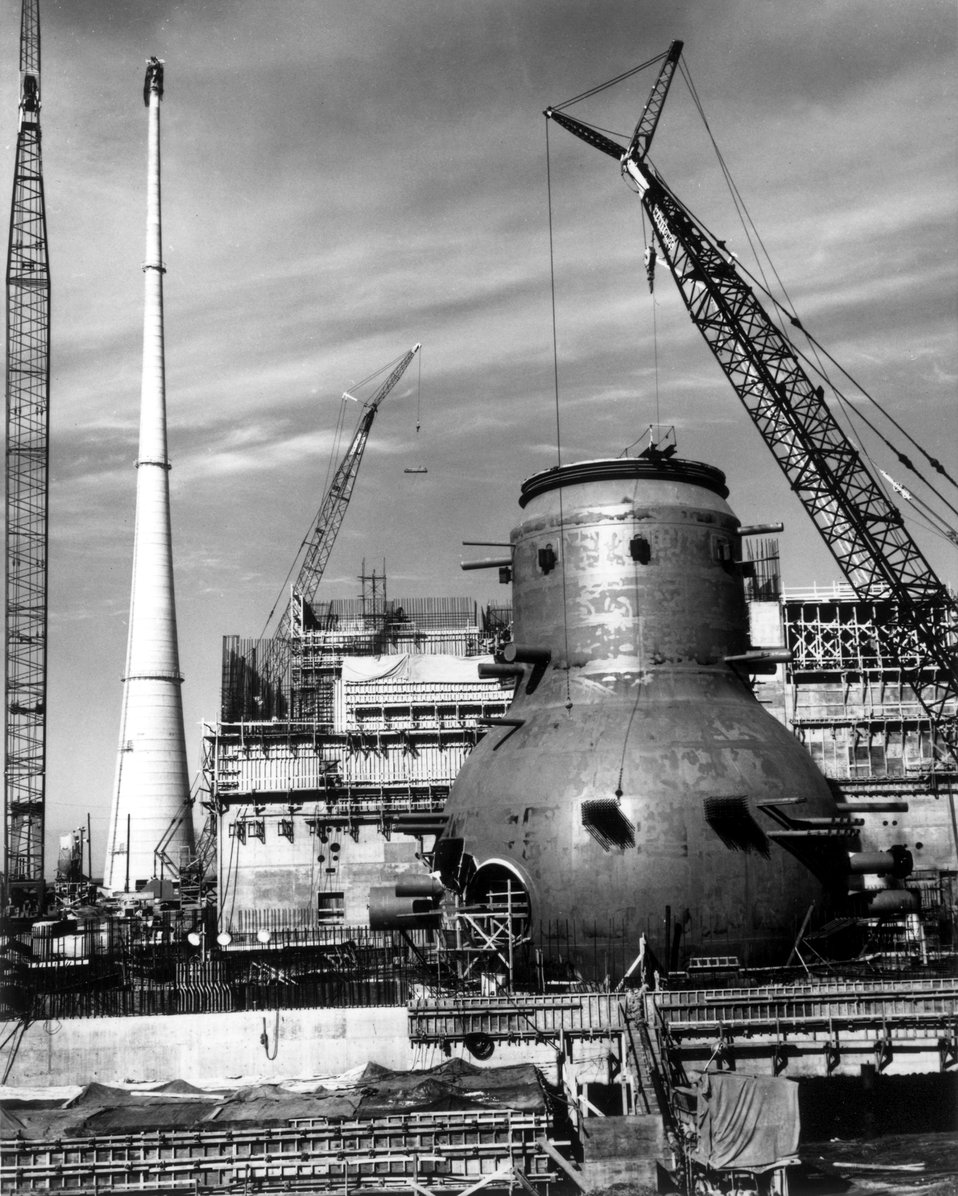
TVA Browns Ferry Nuclear Power Plant under construction at a site on Wheeler Lake, 10 miles southwest of Athens, Alabama. Circa 1970.